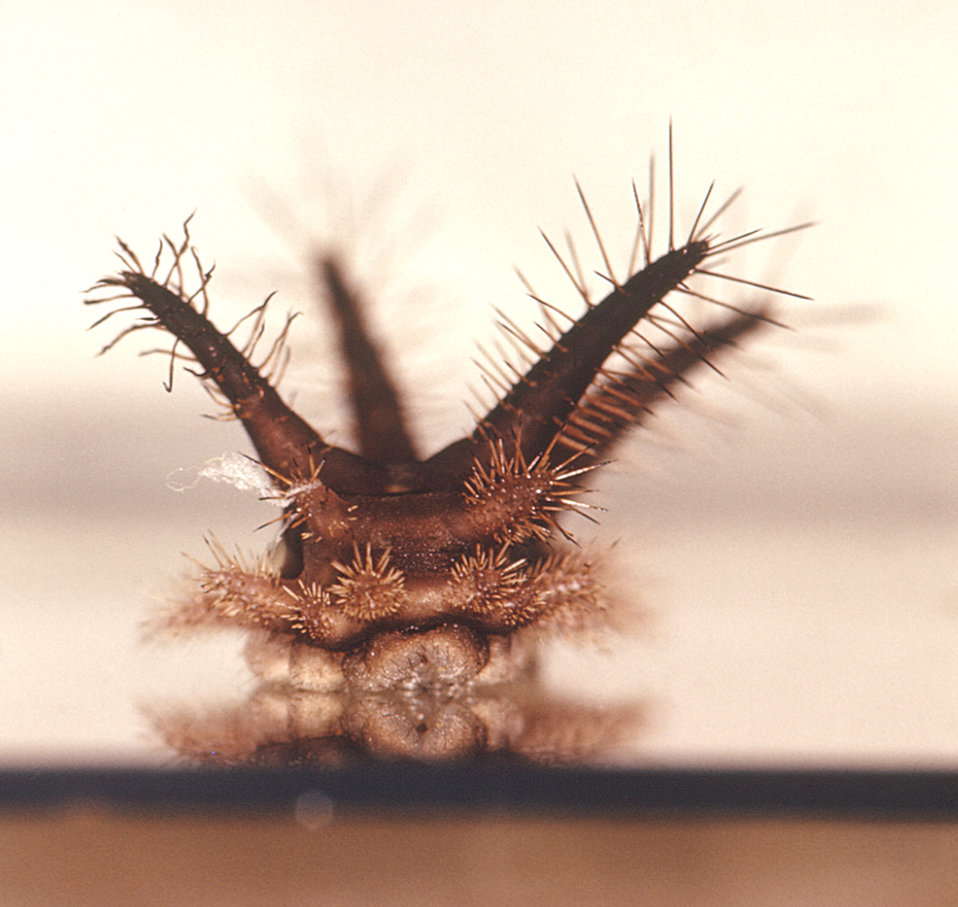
This is an anterior view of a saddleback caterpillar, Sibine stimulae, an urticating, or hive-producing caterpillar.